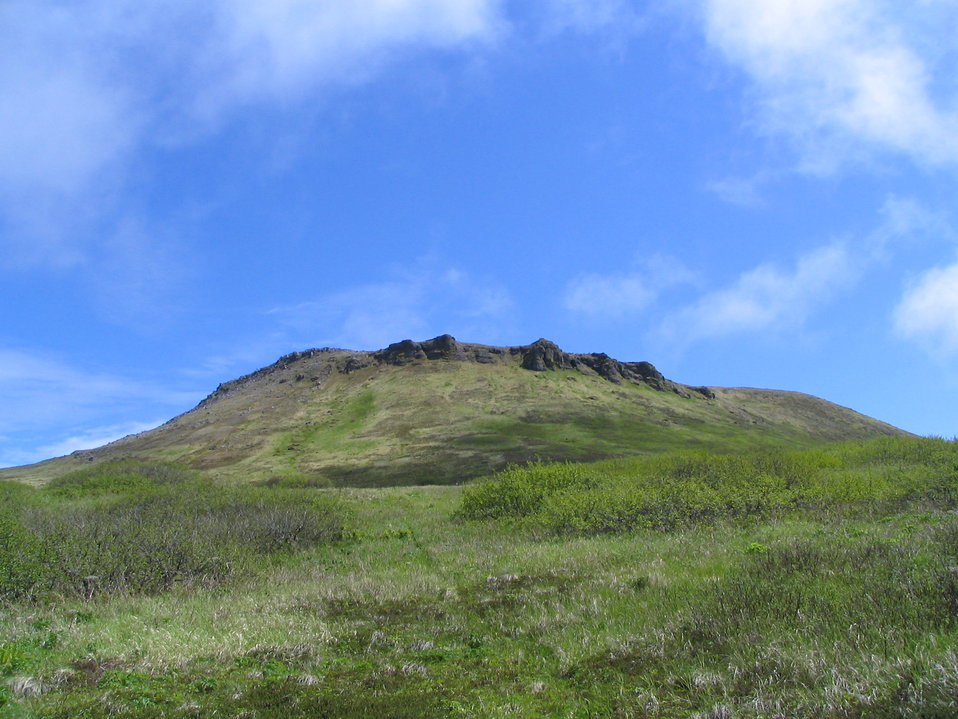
Baldy Mountain

Izembek National Wildlife Refuge